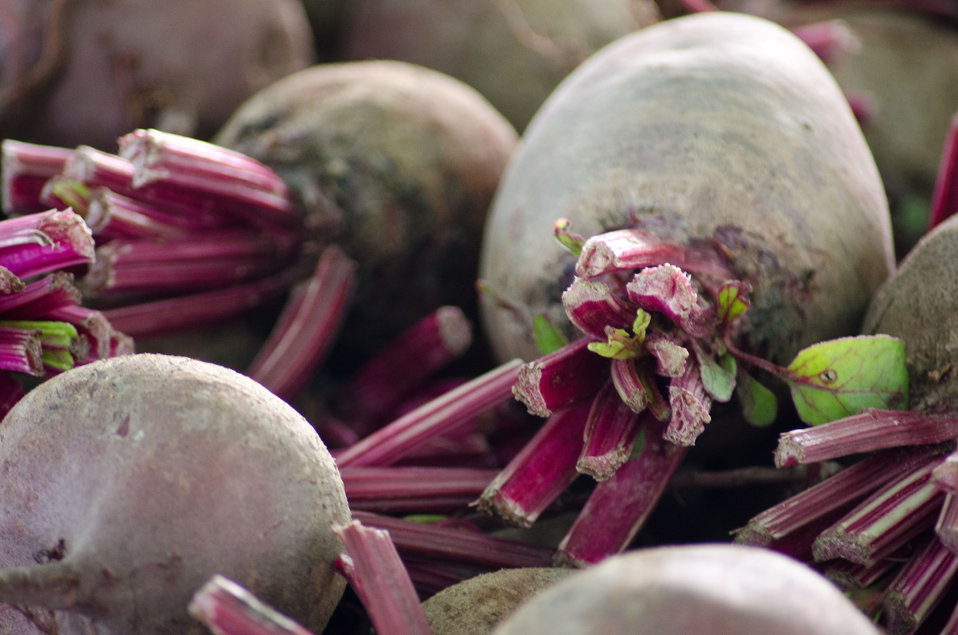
Beets for sale at the Bath County Agricultural Education and Marketing Center, Owingsville, KY, on Friday, July 15, 2011. The Center was the recipient of a $400,000 Rural Business Enterprise Grant. It has given farmers and producers from Bath and surrounding counties the opportunity to manufacture and market their locally grown and locally produced value-added and “Kentucky Proud” branded products, including but not limited to, fresh produce, artisan crafts and specialty food products. The Center is open year-round and allow residents to sell products in four different retail categories, including Kentucky products, regional crafts, “green” groceries and bakery/deli. Several producers expressed their gratitude for Rural Development’s assistance in making the center a reality. The project was made possible through funding the American Recovery and Reinvestment Act of 2009 enacted by the 111th United States Congress in February 2009 and signed into law on February 17, 2009, by President Barack Obama.